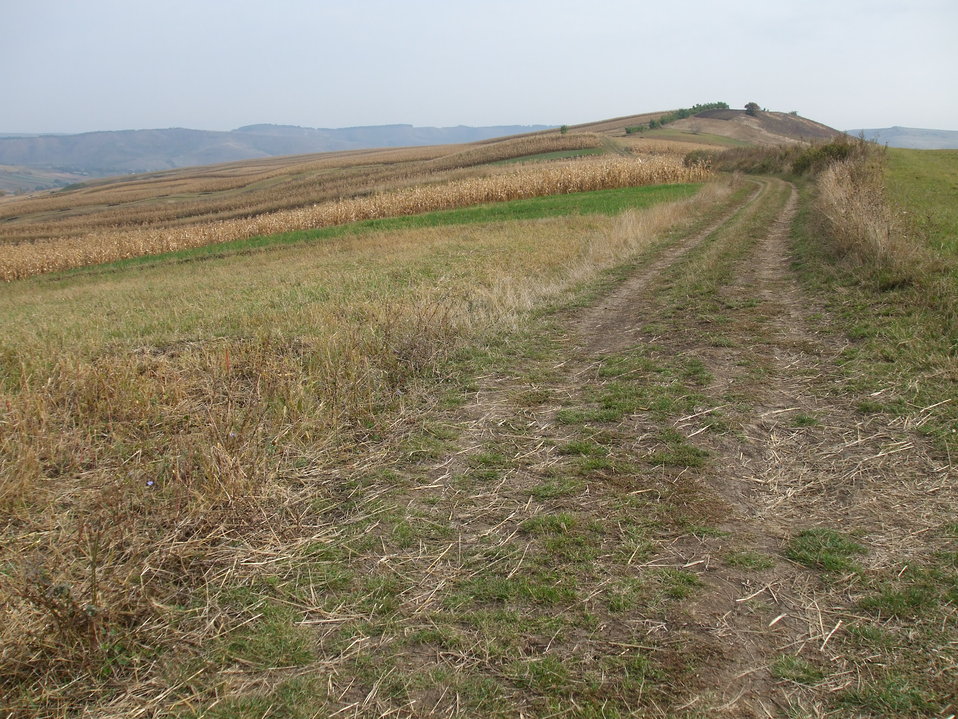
Română: Imagini-Damburile,Jud Cluj